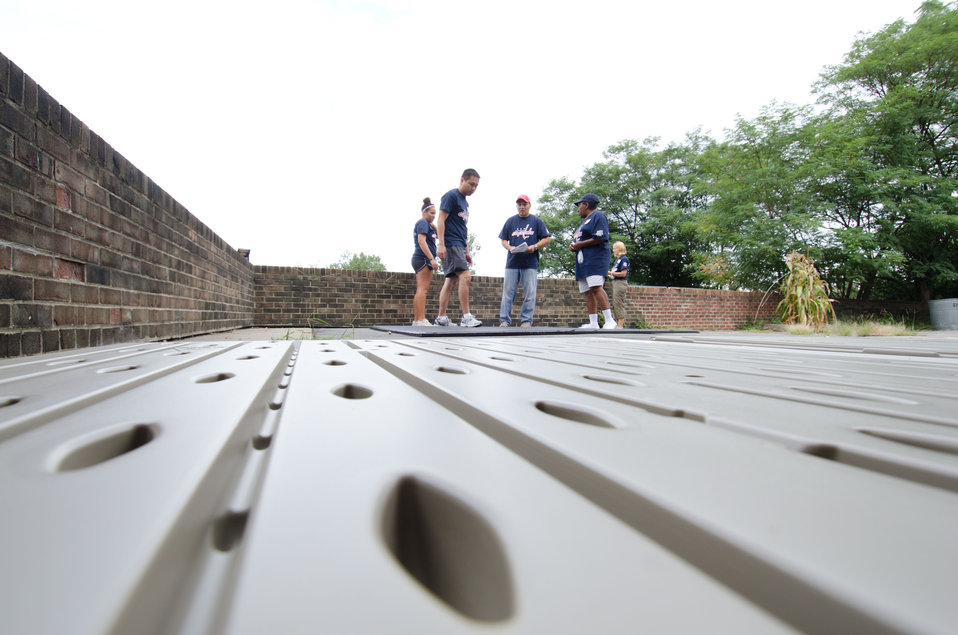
Toolshed Build Leader John Marshall (center) and team stand on the base of the prefabricated toolshed they will assemble where U.S. Department of Agriculture (USDA) People’s Garden Executive Master Gardeners, friends, and family, along with Washington Capitals fans have come to volunteer in District of Columbia Public Schools’ (DCPS) Beautification Day, on Saturday, August 25, 2012, at Thurgood Marshall Elementary School, in Washington, D.C. Each year people are invited to help “spruce up” public school facilities in preparation for the first day of school. More than 70 volunteers pitched in at this large school facility. The People’s Garden effort involves building and painting raised planter boxes, then preparing the soil mixture so they are “ready to grow.” Additionally, a team that includes descendants of U.S. Supreme Court Justice Thurgood Marshall assembles a prefabricated garden toolshed. The Justice’s son, John Marshall leads the team, which includes Brianna the Justice’s great-grand daughter in one of many multi-generational efforts at this school today. Washington Capitals Forward Mike Riberio, his family and mascot Slapshot participated in every project underway at Marshall School. From the outside gardens, to inside murals, and robotics worktable construction, the teams made their goals.